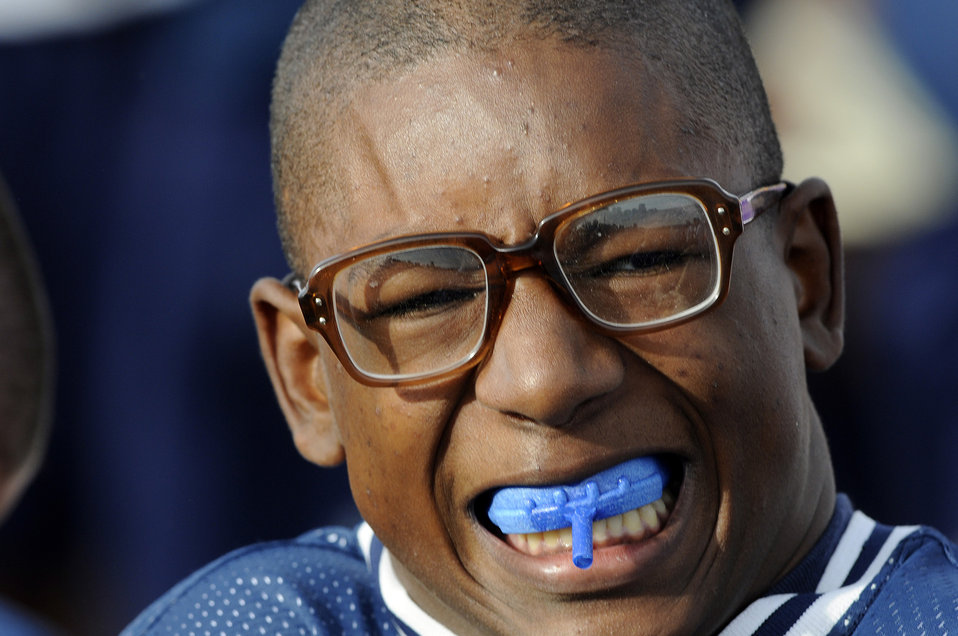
Class of 2013 Field Day

Basic cadet trainees with the U.S. Air Force Academy's Class of 2013 participate in the tug of war during Field Day activities here today. About 1,344 trainees competed in various athletic events during Field Day, including tug
of war, log relays, steeple chase and sprint relays. Basic cadet training started June 25 and continues through Aug. 1. The new cadets are in their first month of training and are learning about Air Force heritage, honor, discipline and Air Force core values, in addition to improving physical
fitness. The fall academic semester begins Aug. 6.